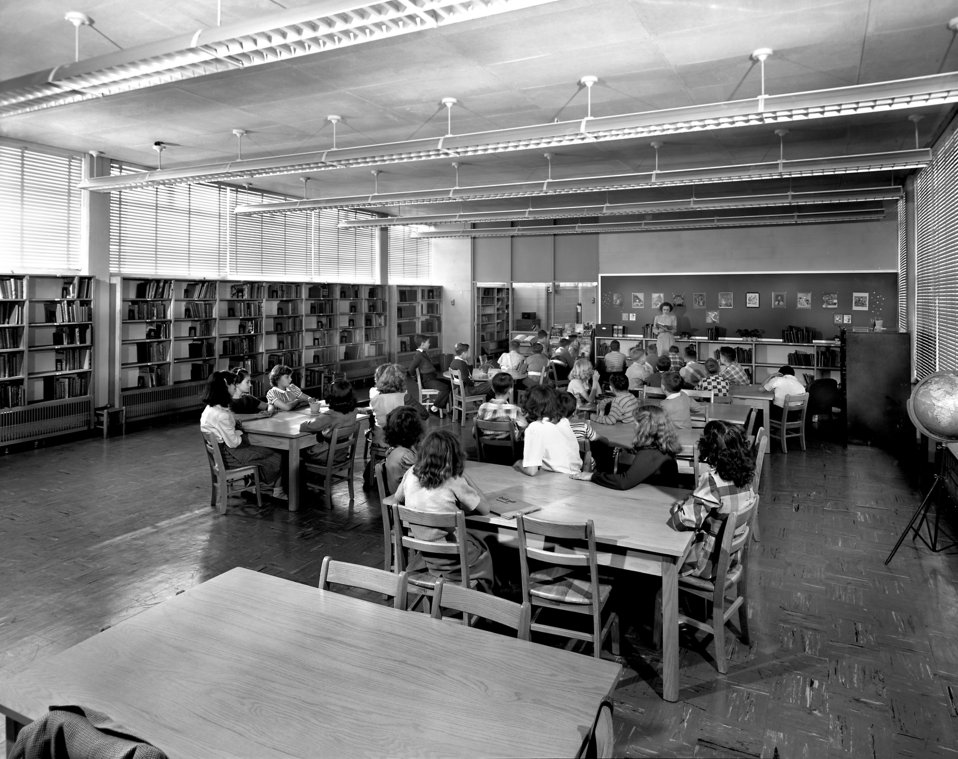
Willow Brook School Inside Oak Ridge 1949

5763-6 DOE photo Ed Westcott 11-29-1949 Oak Ridge Tennessee